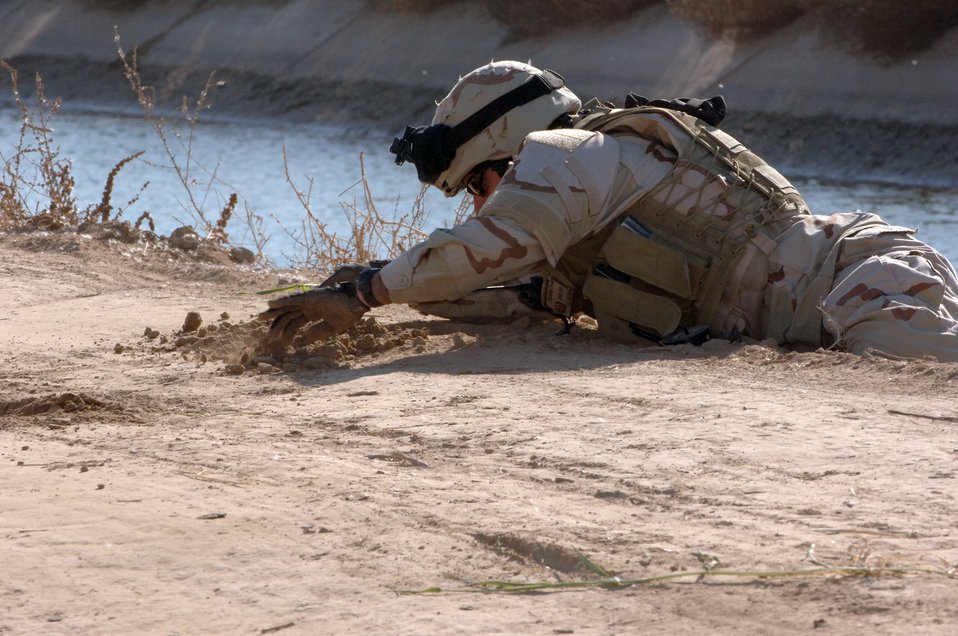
Operation Iraqi Freedom

SHAKARIA, Iraq (AFPN) -- Capt. Joshua Tyler secures an improvised explosive device. The IED was found along a road during a search of the area near a village here. The inspection was part of the search-and-sweep operations by Soldiers from Bravo Company, 2nd Battalion of the 502nd Infantry Regiment. Captain Tyler is with the 447th Expeditionary Civil Engineer Squadron explosive ordnance disposal flight.